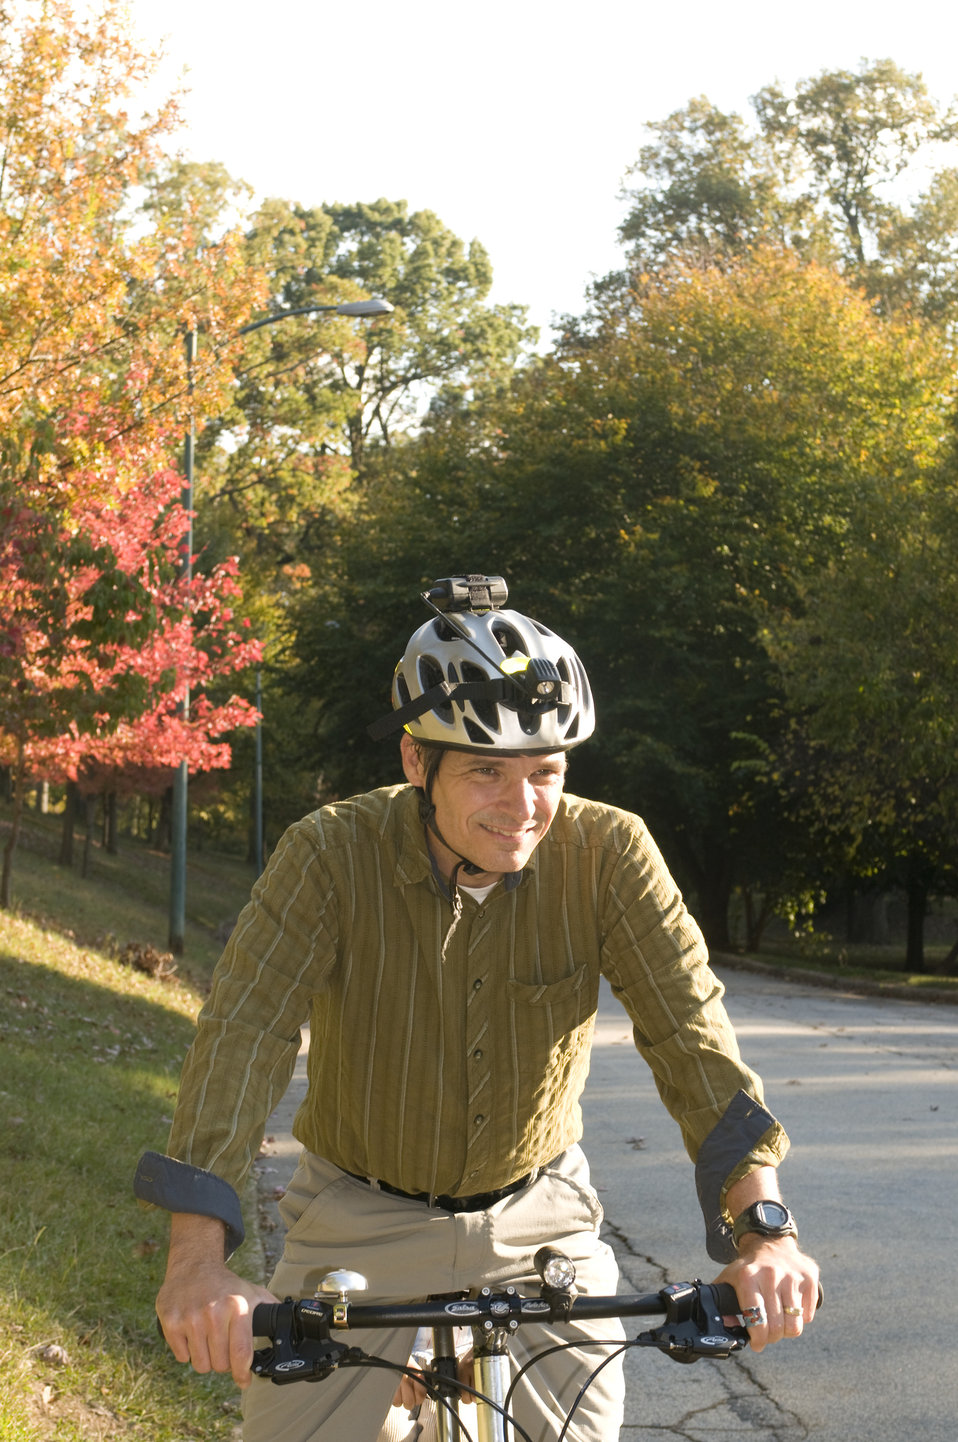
This male bicyclist was spending some time on a beautiful Georgian day, getting some exercise by bicycling on a quite, bike-friendly roadway. He was wearing an aerodynamic helmet, which is a must as a safe cyclist. However, what would have made this an even safer trip, would have been the inclusion of some brightly-colored outerwear, making him even more visible to oncoming drivers.